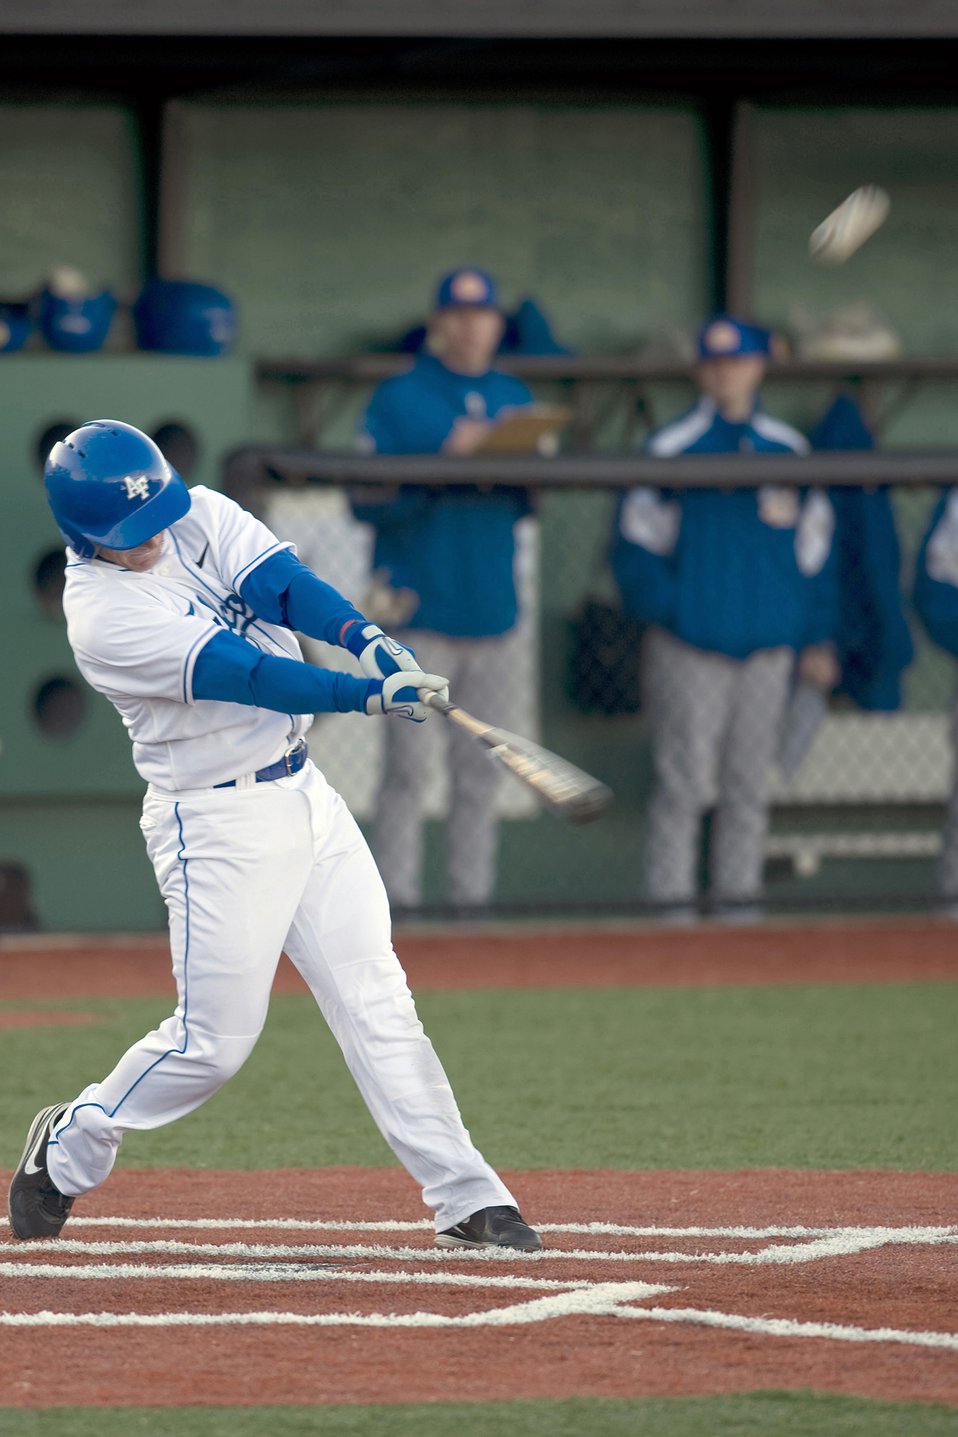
Falcons beat South Dakota State

Air Force senior Ben Ausbun connects for a 3-run home run against South Dakota State during their March 5, 2010, baseball game held at the U.S. Air Force Academy's Falcon Field in Colorado. The Falcons rallied with 6 runs in the bottom of the 8th inning to win the contest 12-11.